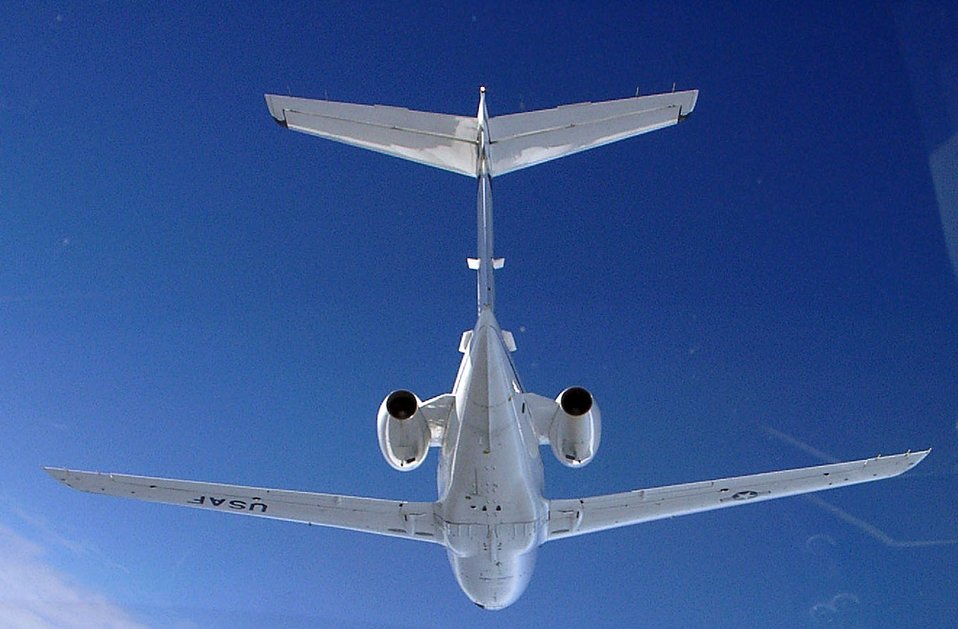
T-1A Jayhawk

The underside view of a T-1A Jayhawk on a training mission over San Antonio recently